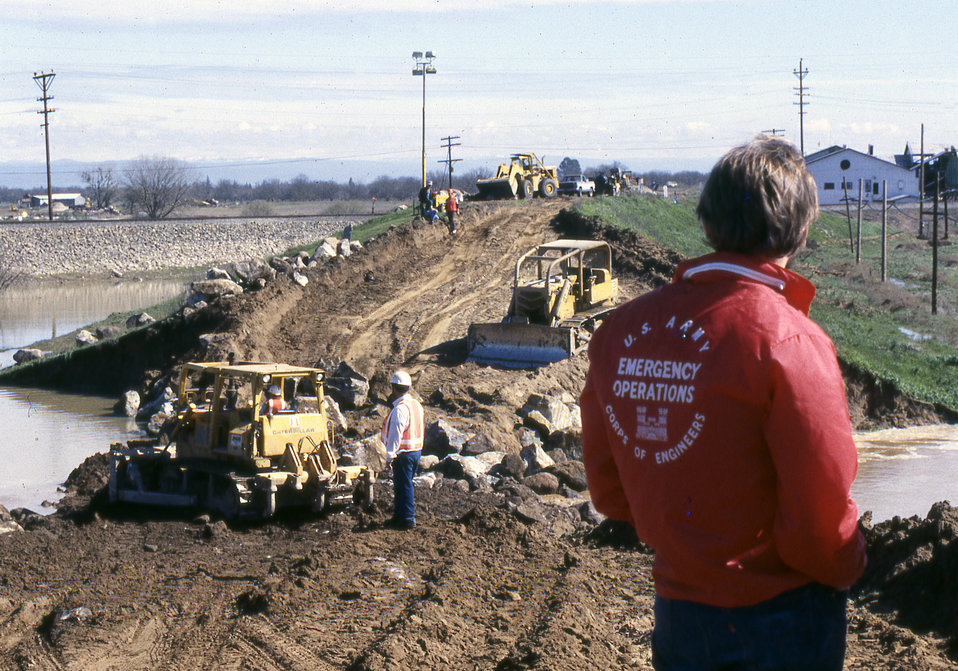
Levee breach in Linda 1986

Crews make emergency repairs to a breached Linda, Calif., levee in February 1986.